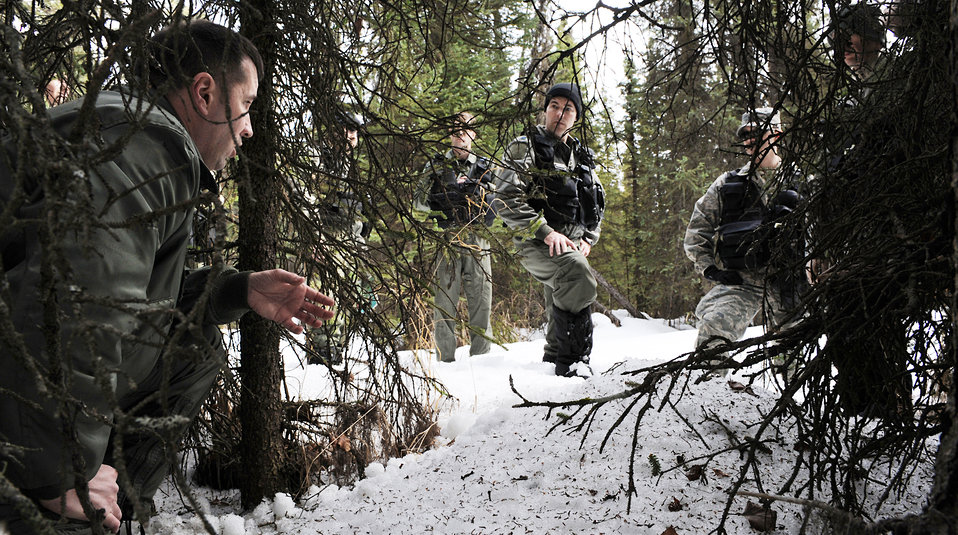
Airmen train for cold weather survival

Tech. Sgt. Drew Timms demonstrates to members of the 962nd Airborne Air Control Squadron how to conceal themselves into their surrounding environment April 12, 2010. Sergeant Timms is a survival, evasion, resistance and escape specialist with the 3rd Operation Support Squadron Weapons and Tactics Flight.